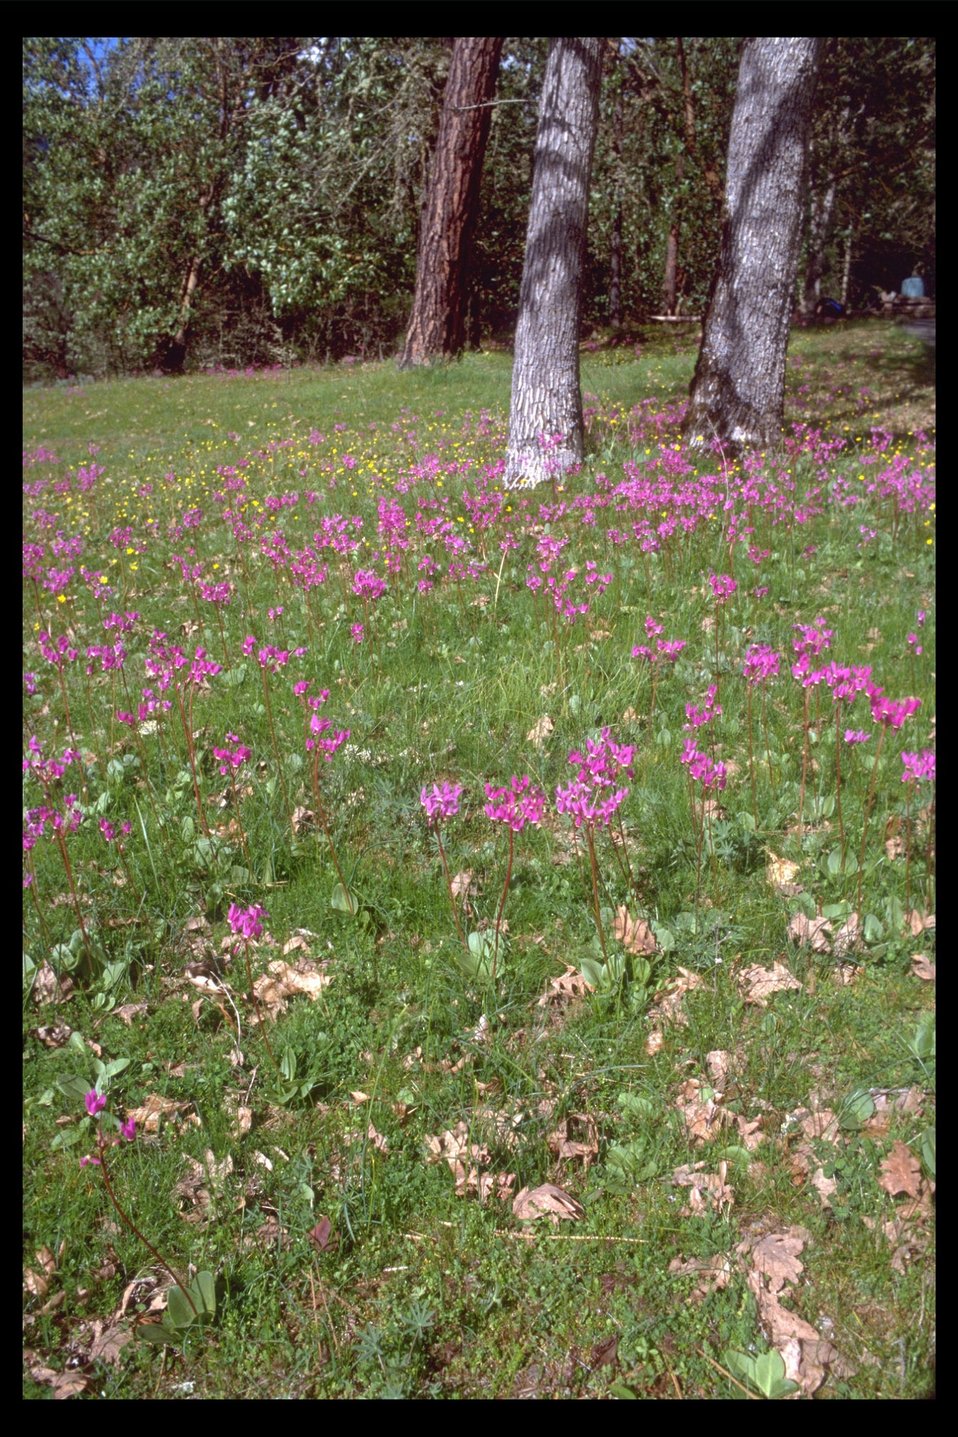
Henderson's Shooting Star (Dodecatheon hendersonii) along Ward's Creek.